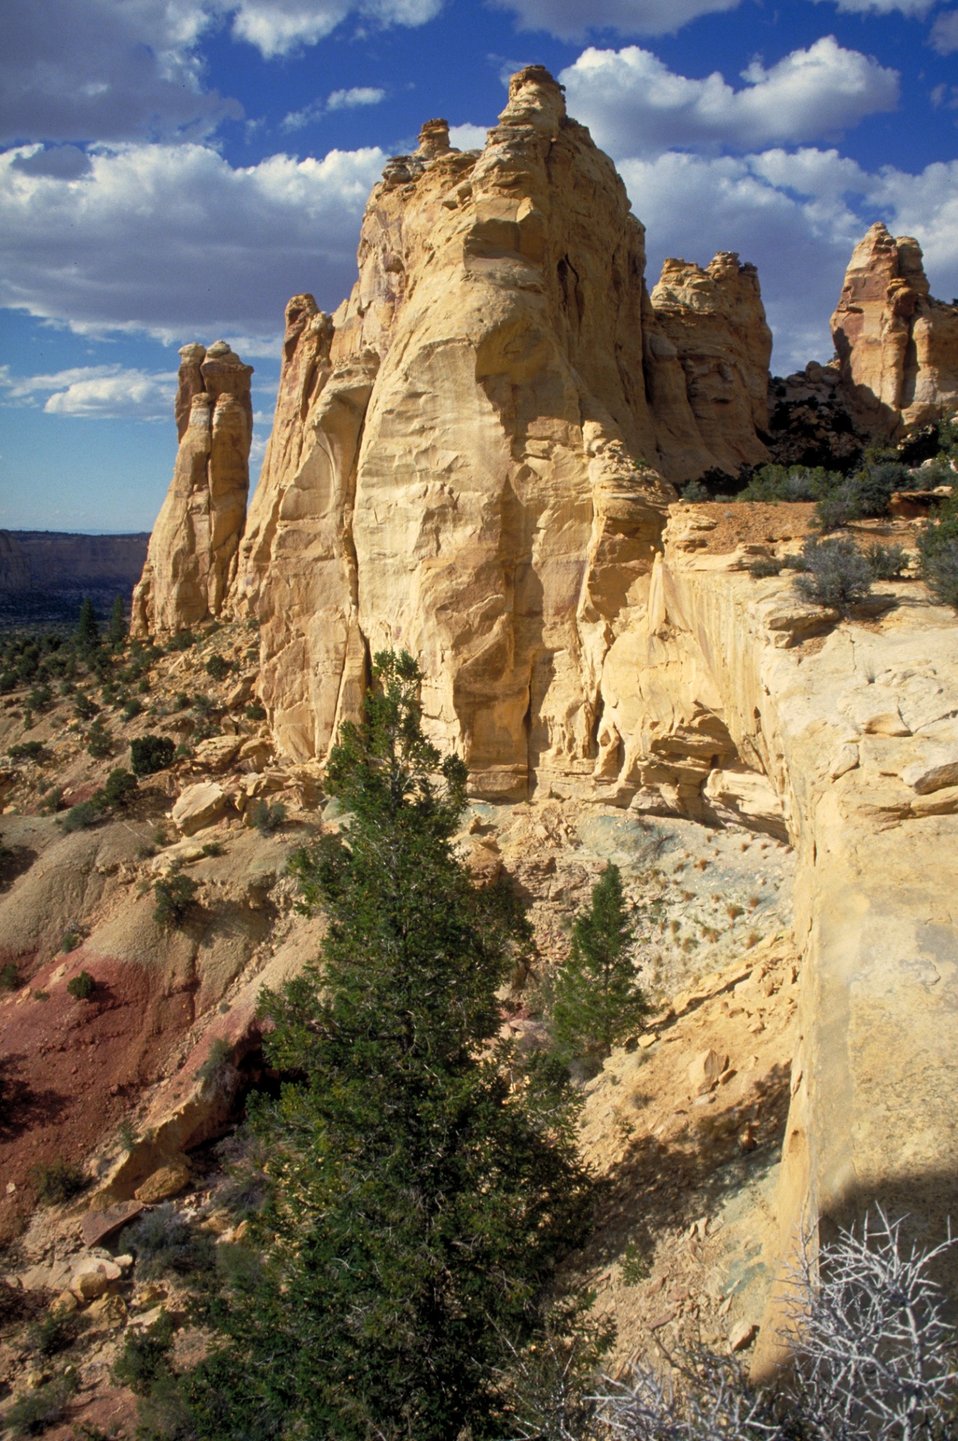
Head of Sinbad, San Rafael Swell